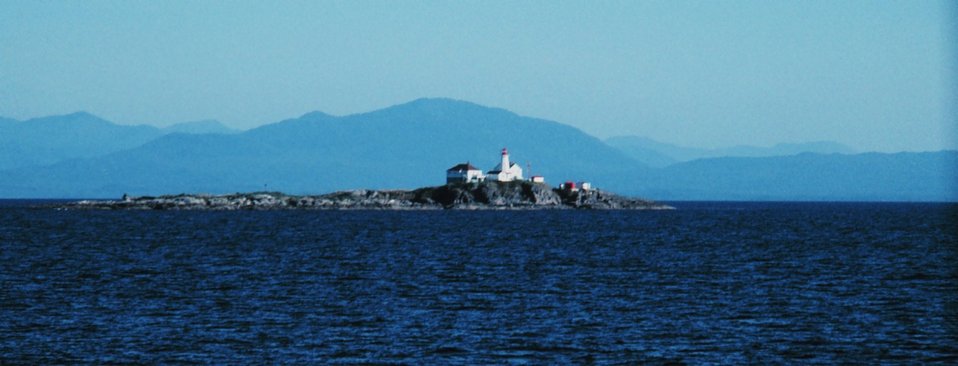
British Columbia lighthouse